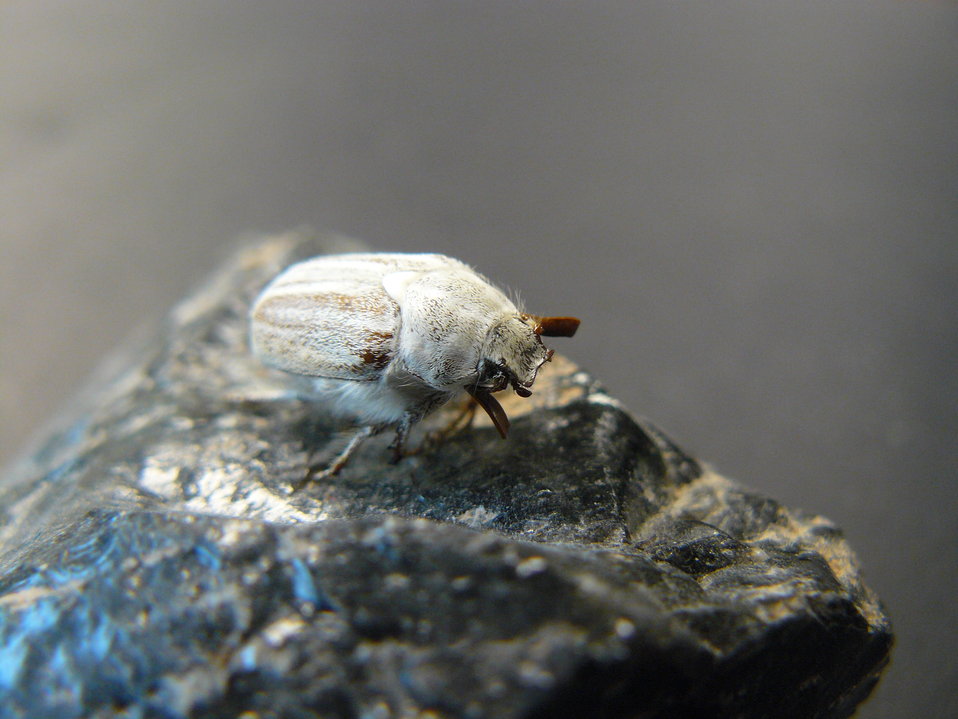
Casey's June beetle (Dinacoma caseyi) is less than an inch long and has a dusty brown or whitish color, with brown and cream longitudinal stripes on its wing covers and back. It is found in the Palm Canyon Wash area in the southern part of the City of Palm Springs, California, and on portions of Agua Caliente Tribal reservation lands. The beetle prefers habitat consisting of Carsitas gravelly sands that form at the base of the Santa Rosa Mountains. It also lives in underground burrows, emerging sometime between late March and early June.